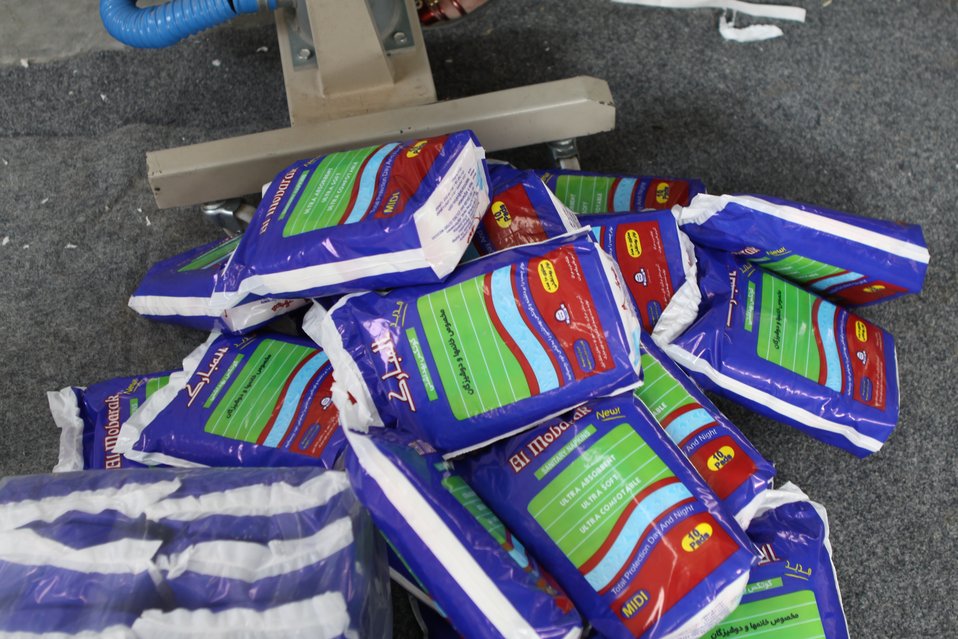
100525 Hirat Marble Conference 809